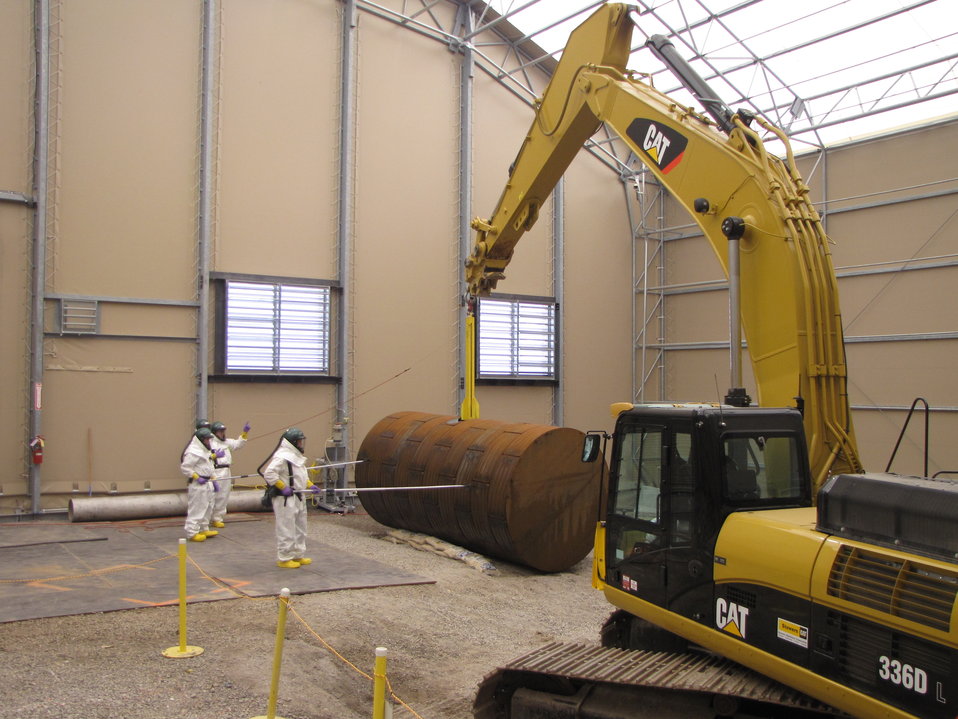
Oak Ridge training

Employees receive training to remove Tank W-1A prior to excavating it. From 1951 until 1986, the tank collected and stored liquid waste from radiochemical separations and high-radiation facilities at Oak Ridge National Laboratory, until significant levels of soil and groundwater contamination were traced to the vessel.